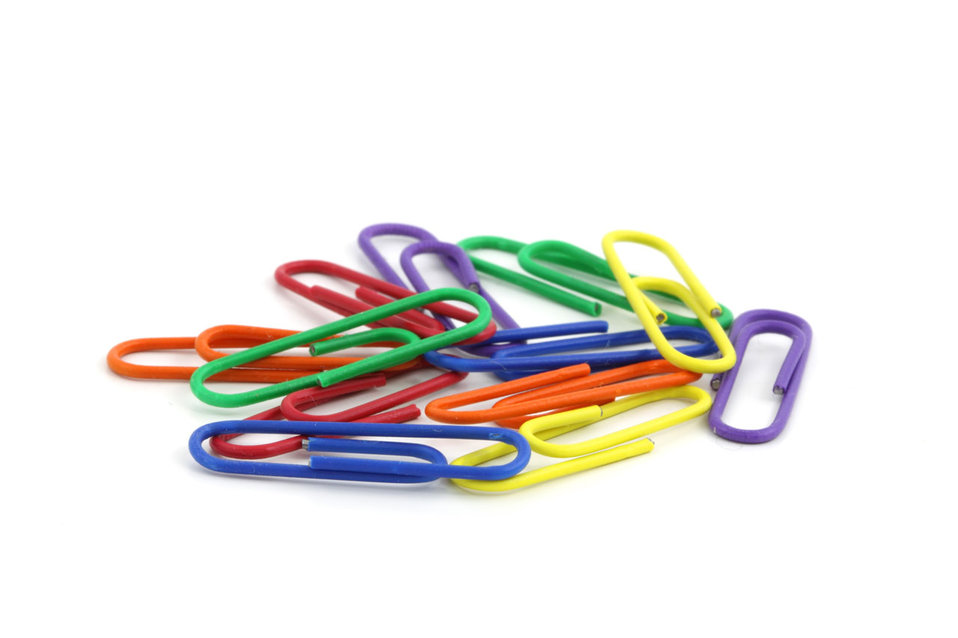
Paper clips

Several paper clips on white background.